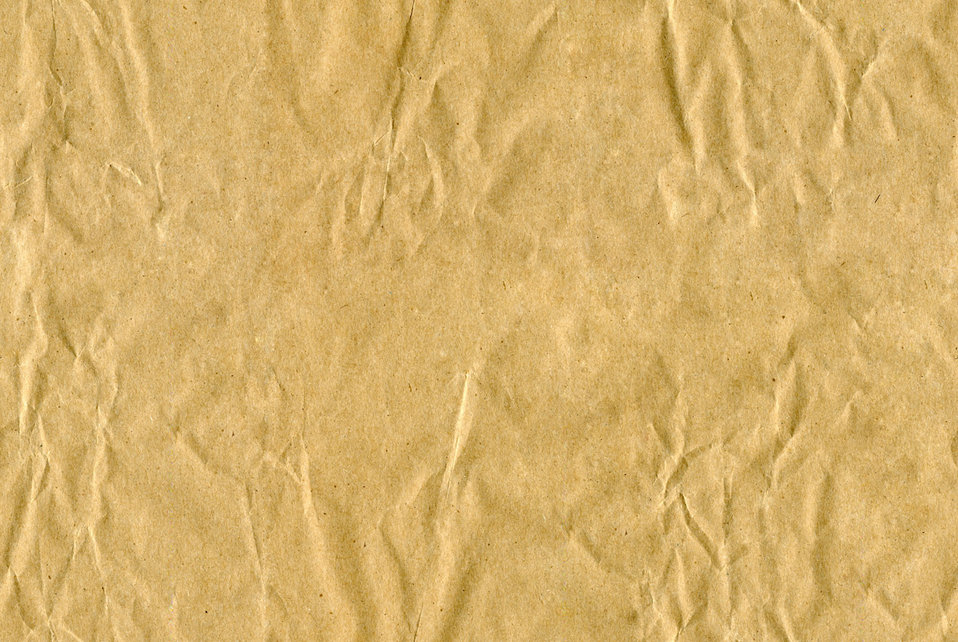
Seamless paper texture

Seamless brown paper texture.